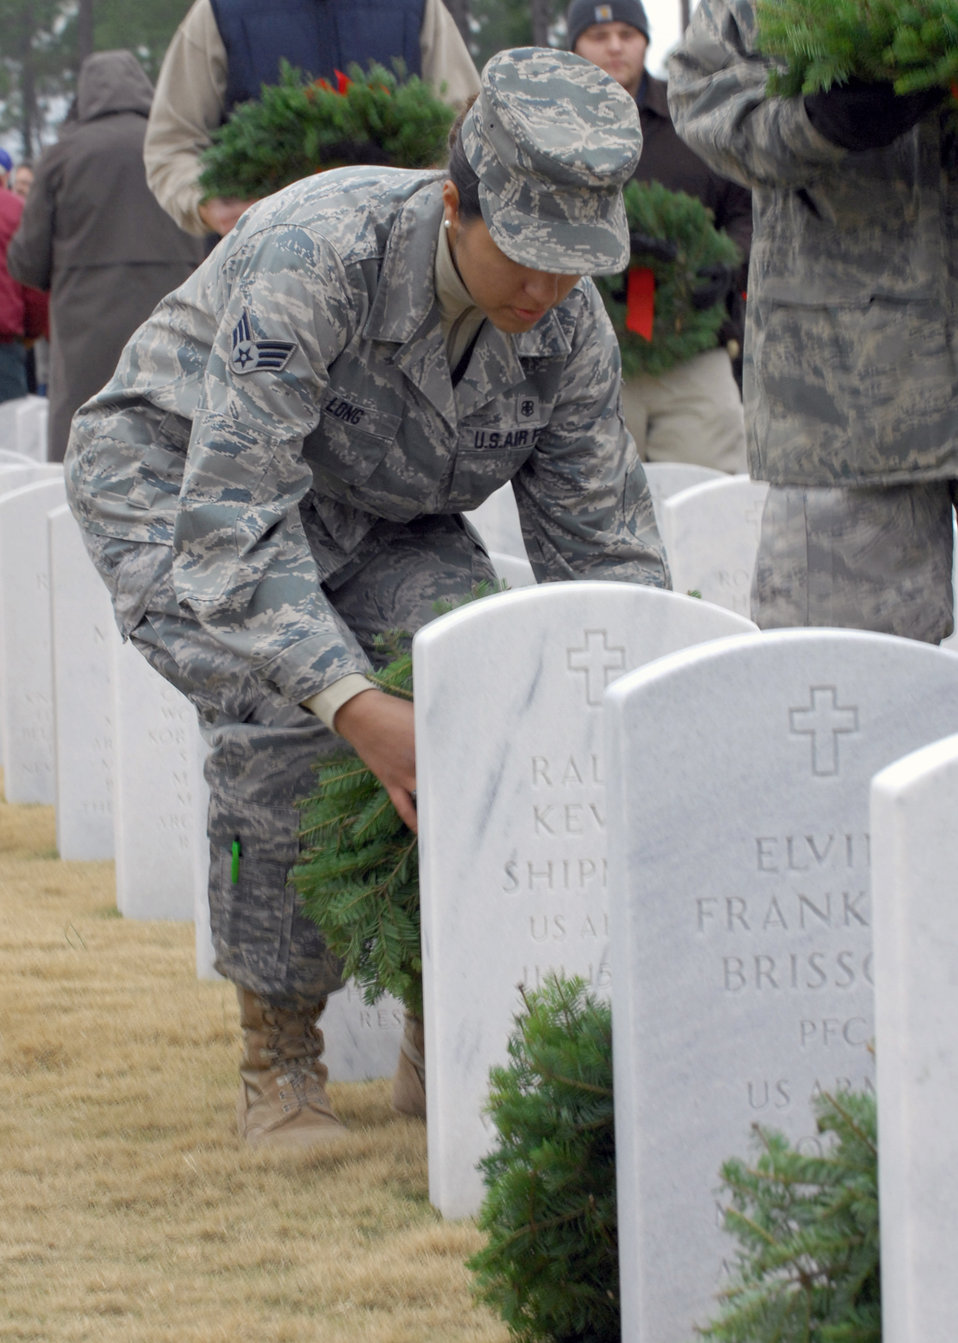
Wreaths Across America

Senior Airman Rebecca Long places a wreath on the tombstone of a fallen veteran at the Wreaths Across America ceremony Dec. 11, 2010, at Fort Jackson National Cemetery in Columbia, S.C. The ceremony included a memorial presentation, recognition of prisoners of war, those still missing in action and Merchant Marines, a salute by a cannon battery and buglers. Airman Long is a medical technician with the 20th Medical Operations Squadron.